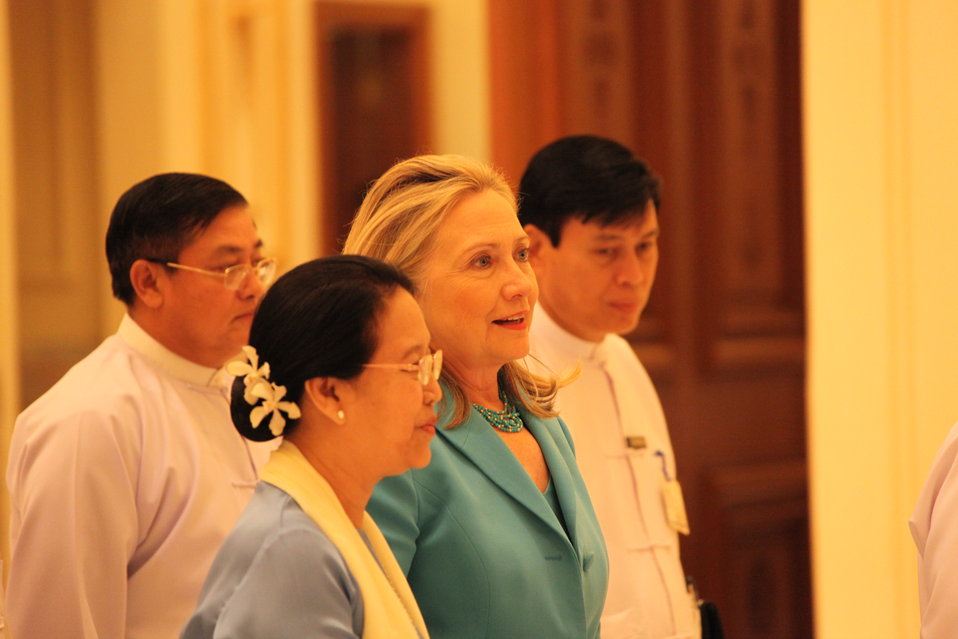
Secretary Clinton Meets With Burmese First Lady Daw Khin Khin Win

U.S. Secretary of State Hillary Rodham Clinton meets with with Burmese First Lady Daw Khin Khin Win at the Office of the President in Nay Pyi Taw, Burma, on December 1, 2011.